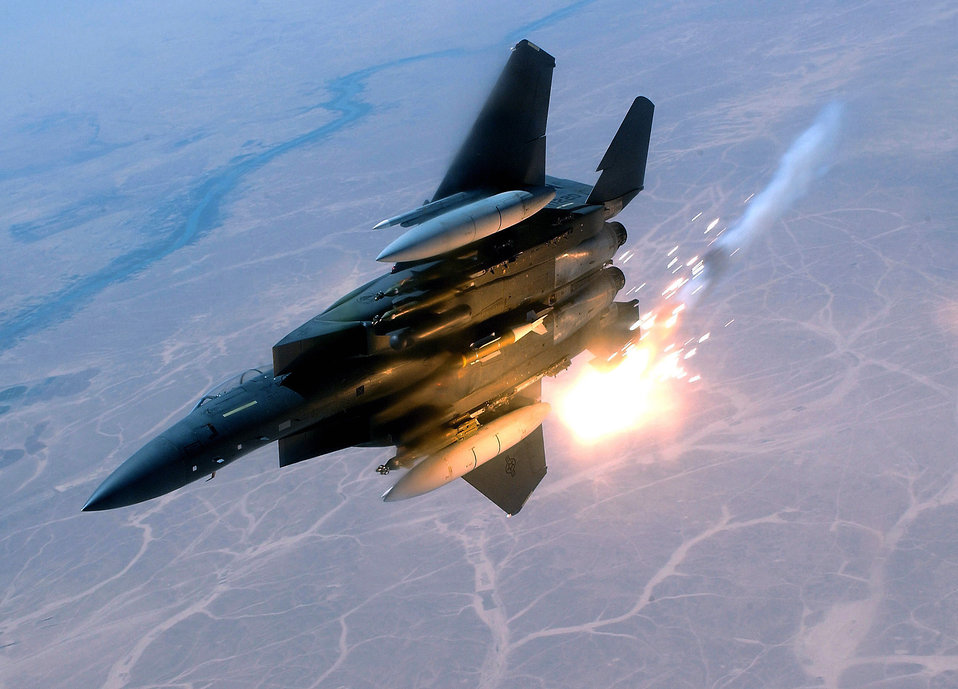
Nov. 2 airpower summary: F-15Es stike enemy forces

An F-15E Strike Eagle pops flairs during a combat sortie in Southwest Asia. The F-15E's primary role in Afghanistan is providing close-air support for ground troops.